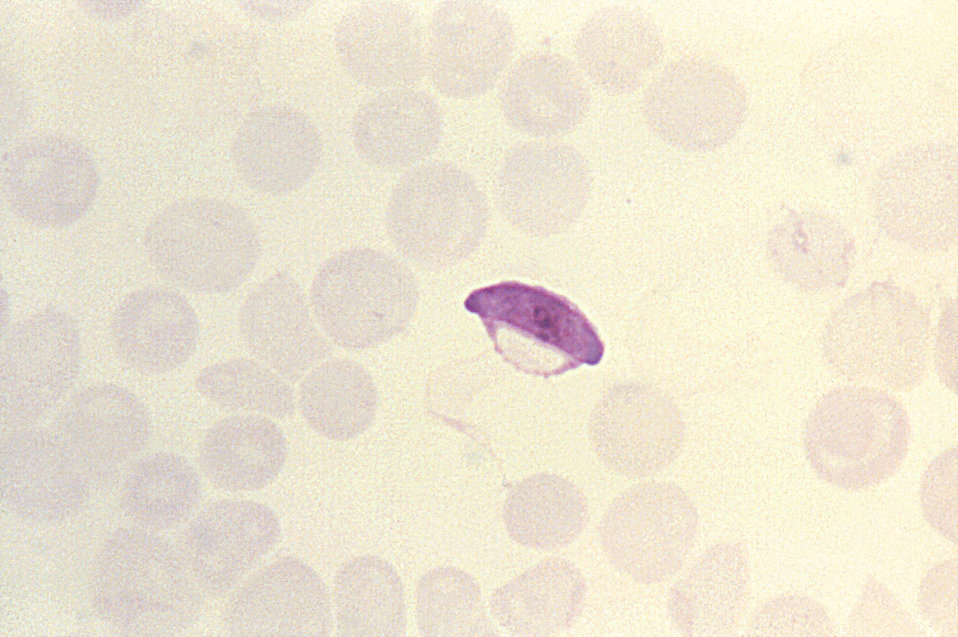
This thin film Giemsa-stained micrograph depicts a parasitic P. falciparum microgametocyte.